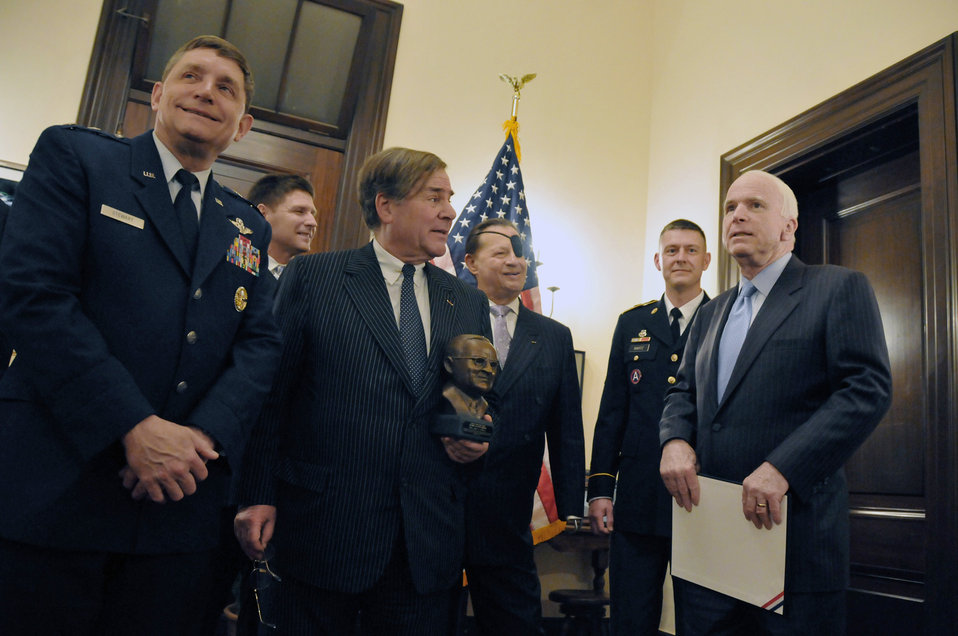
McCain: National Guard one reason homeland defense succeeds

Arizona Sen. John McCain speaks with members of the Reserve Forces Policy Board March 10, 2011, after being presented with the 2011 Citizen Patriot Award. The award recognizes Senator McCain's substantial contribution to the nation's defense and national security.